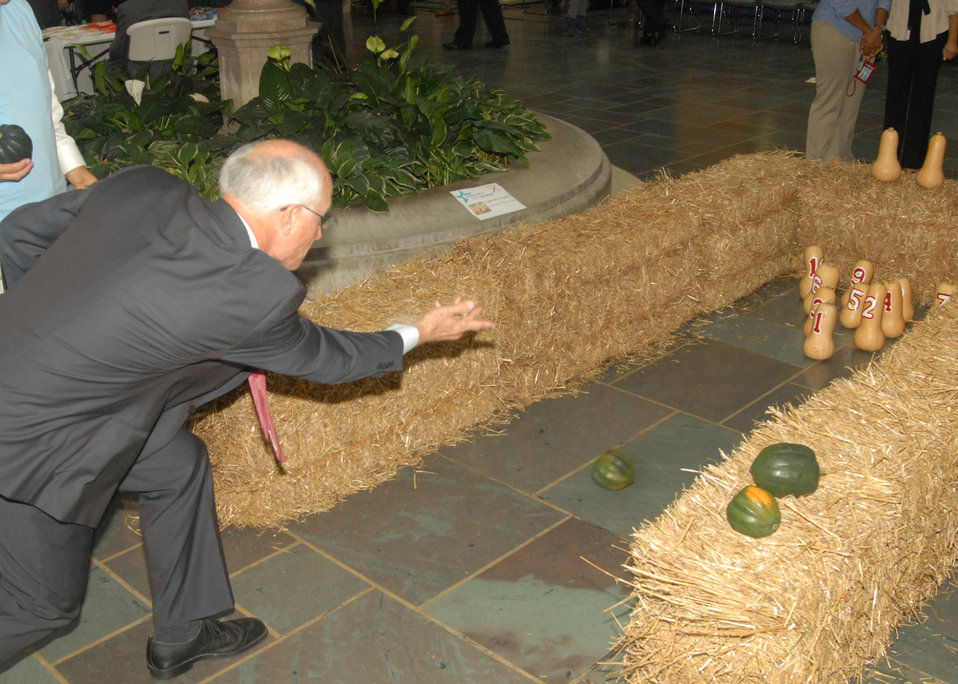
Agriculture Under Secretary for Natural Resources and Environment (NRE) Harris Sherman tries his hand at squash bowling at the U.S. Department of Agriculture’s (USDA) opening ceremony for the 2012 Combined Federal Campaign on Tuesday, Sept. 18, 2012 at the USDA Whitten Building, in Washington, D.C. USDA has set a goal of raising just under $2 million from their employees in the national capital area. The theme for this year’s CFC campaign is “Choose Hope”.